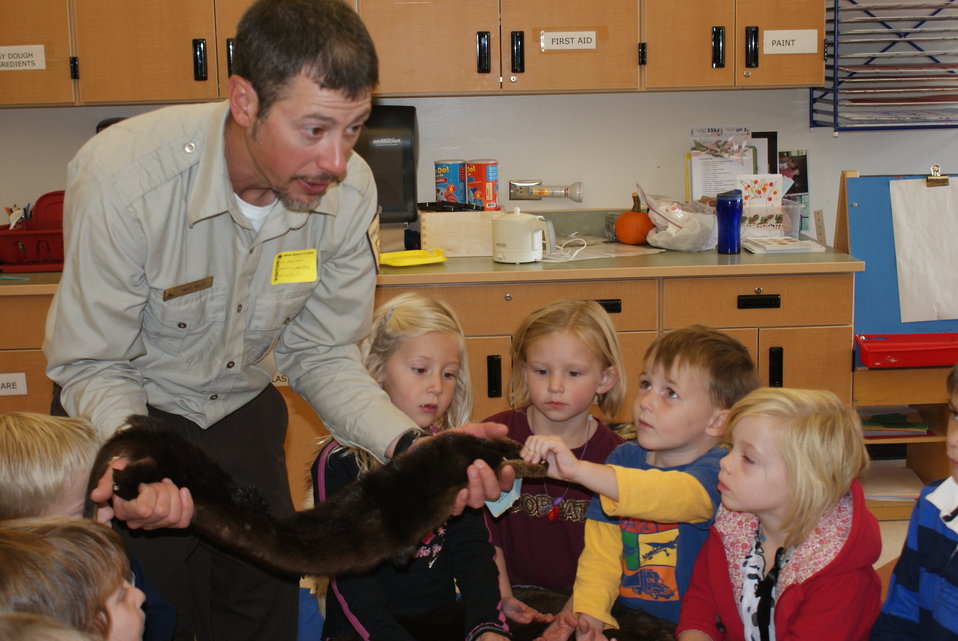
Scientists in the Community Program

U.S. Fish and Wildlife Service Mountain-Prairie Region Deputy ARD for External Affairs, Matt Kales, introduces early childhood education students at William Roberts Elementary School in Denver to some of Colorado's native and historic wildlife species.